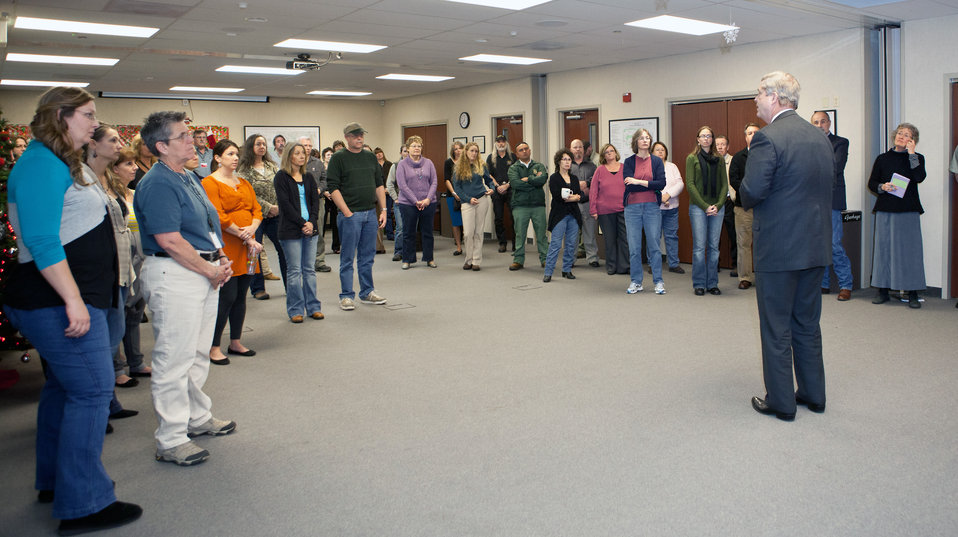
Agriculture Secretary Tom Vilsack speaks with U.S. Department of Agriculture (USDA) employees at the Shasta-Trinity National Forest headquarters in Redding, CA on Dec. 10, 2012.